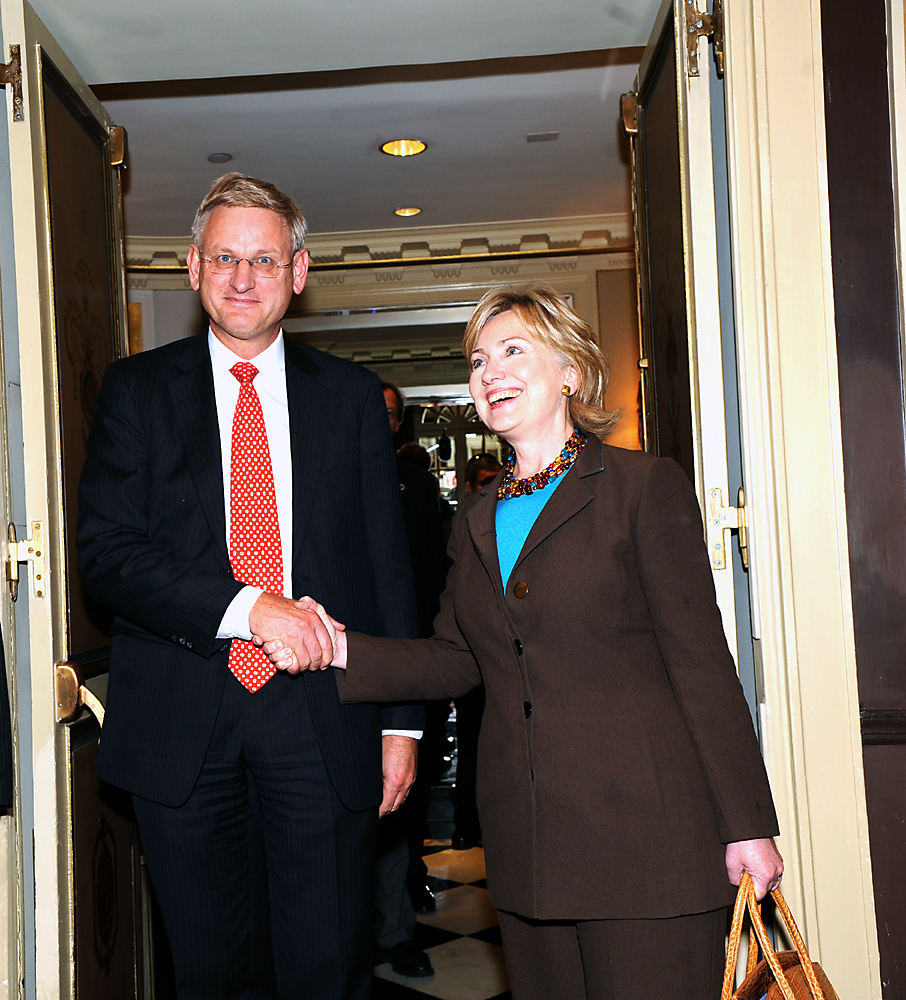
UNGA 2009: Secretary Clinton Participates in Meeting With EU Foreign Ministers

U.S. Secretary of State Hillary Rodham Clinton is greeted by Swedish Foreign Minister Carl Bildt during a EU Foreign Ministers meeting hosted by the Swedish Foreign Ministry at the Waldorf Astoria hotel during the 64th Session of the UN General Assembly in New York City, New York September 22, 2009.